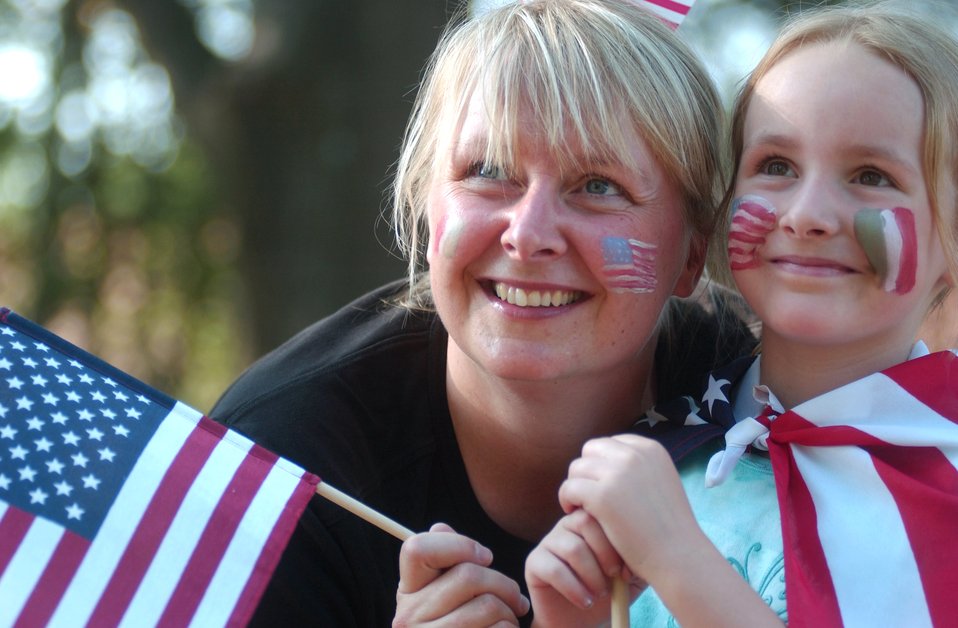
Hometown crowd roots for U.S.A.

Mother and daughter, Sari and Serena Dechellis, show off their American and Italian face-painting flags in honor of the U.S.A. vs. Italy World Cup soccer match at the World Cup Fest at Pulaski Park in Kaiserslautern, Germany, on Saturday, June 17.